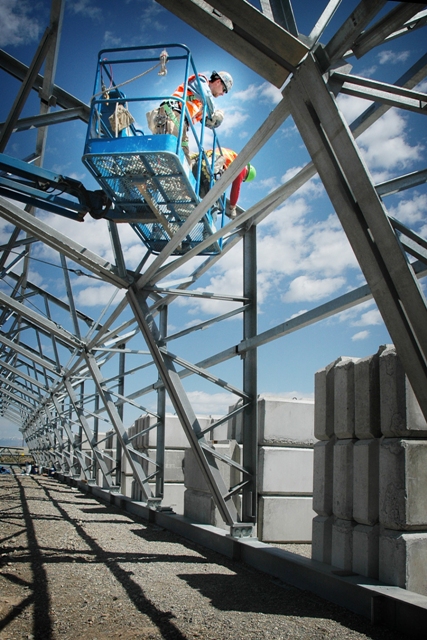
ARRA-funded Accelerated Retrieval Project III completed at the DOE Idaho Site

Workers prepare the steel structure of the ARP IV facility before the fabric skin is installed.

ARP IV, a specialized exhumation facility designed to withstand sunlight, snow, wind and operate under negative pressure contain airborne contaminants– has been constructed. Waste exhumations are scheduled to commence in January 2010.